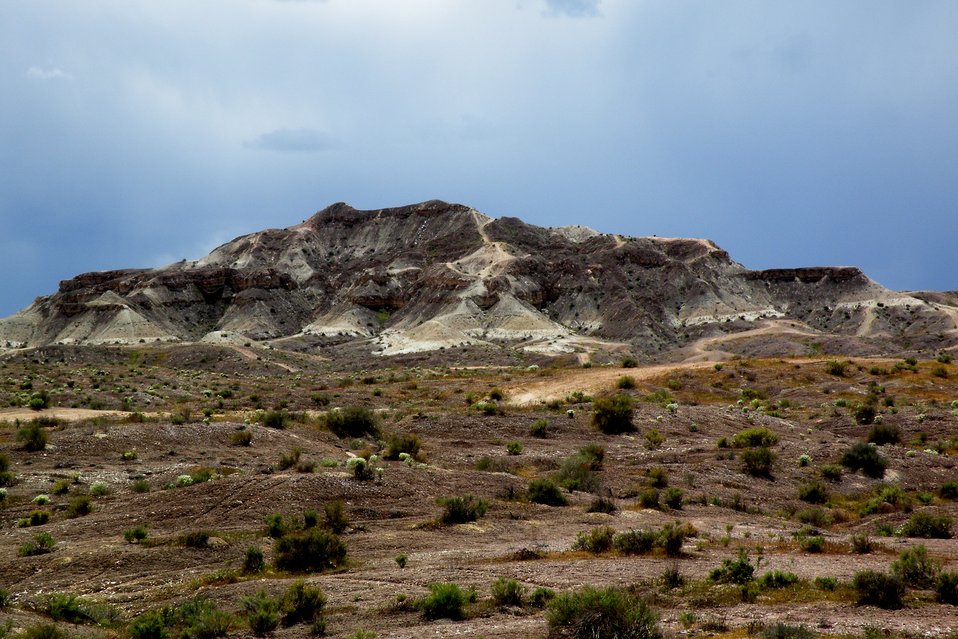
White Dome Nature Preserve

Located south of the fast-developing St. George, Utah, the White Dome Nature Preserve provides an oasis for plants, animals, and people—with plans in the works for public hiking trails and educational signage.